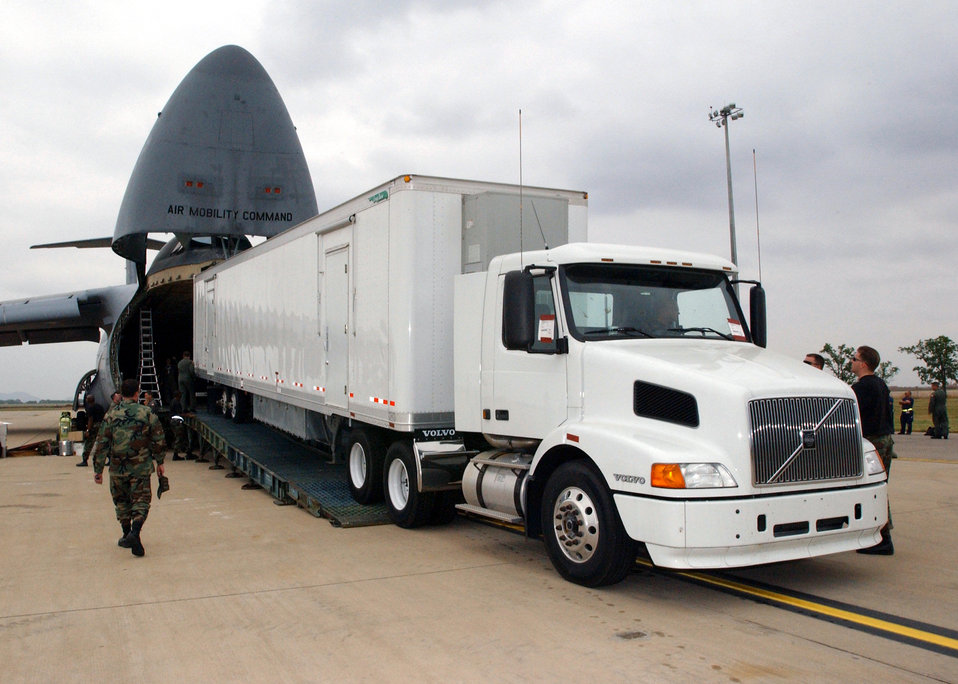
Tall order

ALTUS AIR FORCE BASE, Okla. (AFPN) -- Crews from the 97th Air Mobility Wing here and the 60th AMW at Travis Air Force Base, Calif., load a semitrailer carrying humanitarian cargo into a C-5 Galaxy for delivery to a forward-deployed location supporting Operation Iraqi Freedom. With clearance coming as close as 4 inches at one point, the trailer took about five hours to load using a Minuteman Missile ramp. The C-5 is assigned to the 60th AMW.